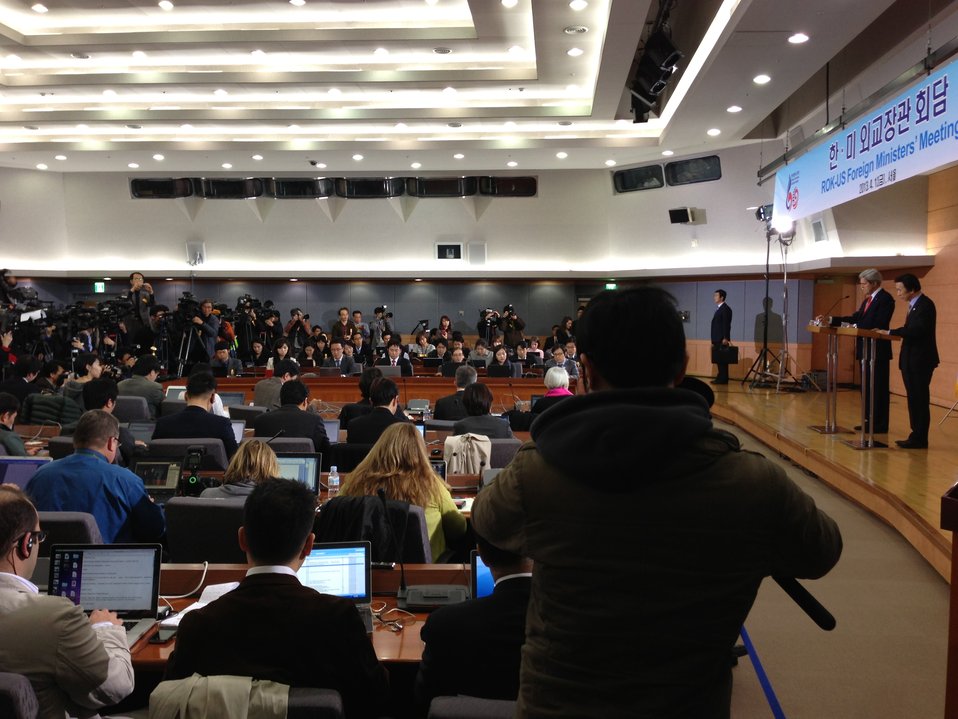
Secretary Kerry and Foreign Minister Yun Byung-se Hold News Conference

U.S. Secretary of State John Kerry and South Korean Foreign Minister Yun Byung-se address over 200 reporters on live national television at a news conference in Seoul, South Korea, on April 12, 2013.